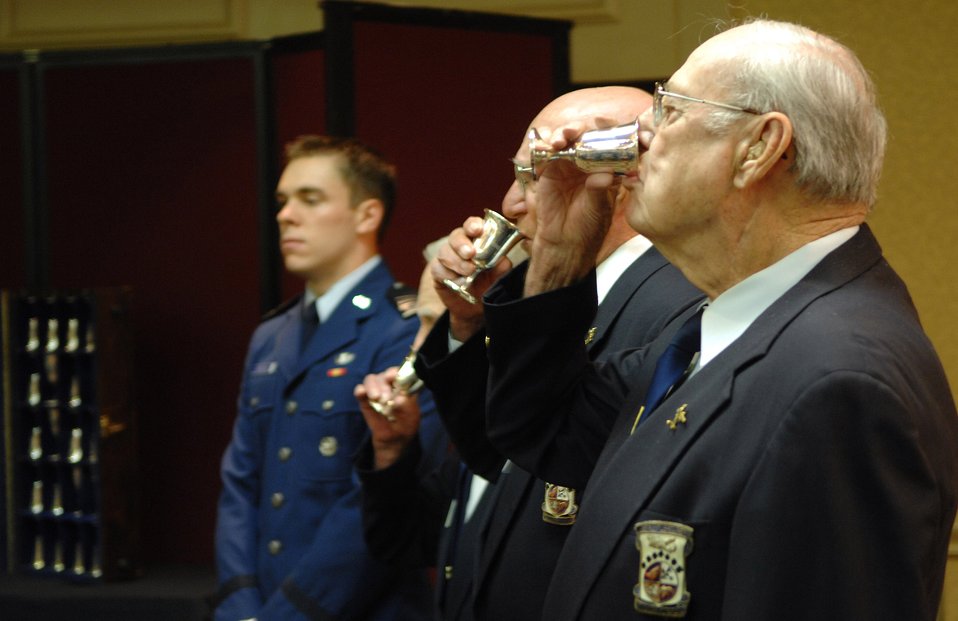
Raider goblet ceremony

Doolittle Raiders drink a toast to their fallen raiders during a reunion and goblet ceremony in San Antonio April 18. When there are but two Raiders left, the two men will open a bottle of cognac, vintage 1896 (the year Doolittle was born) and give a final toast to their departed comrades. Fourteen of the 80 Raiders are still alive.